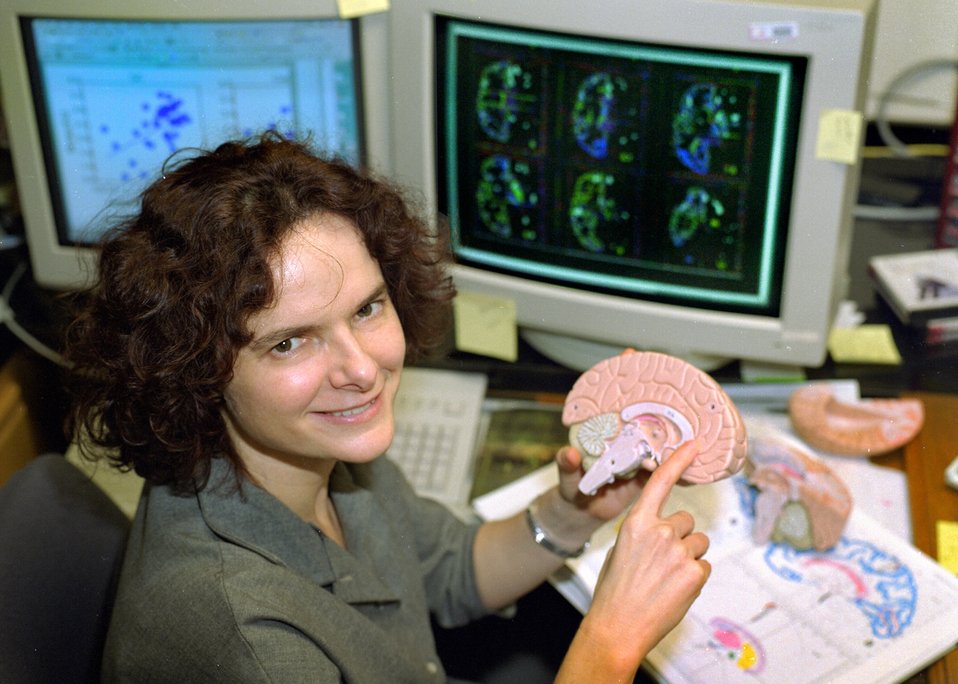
Dr. Nora Volkow, NIDA Director